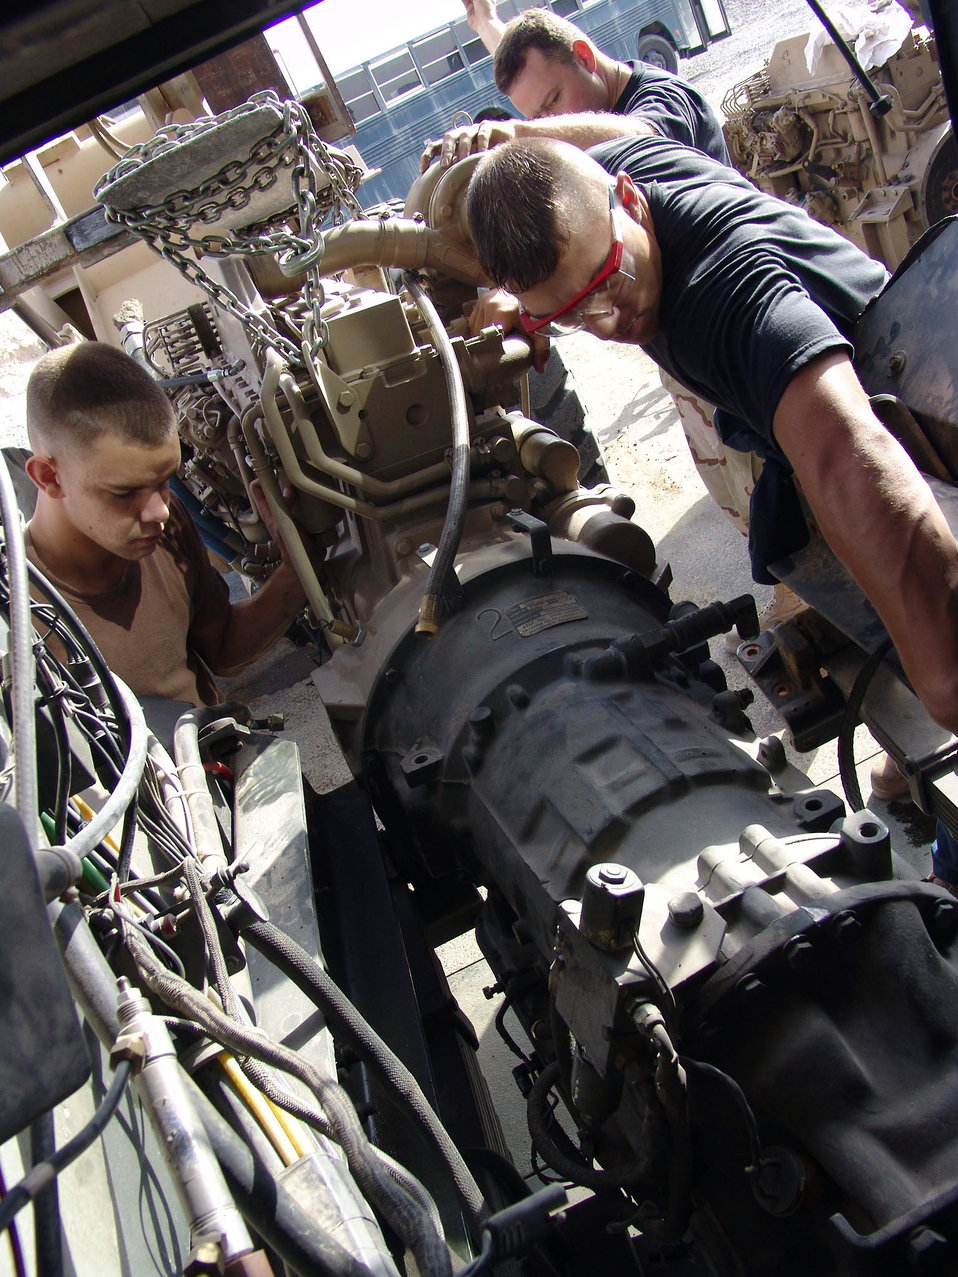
Fix it, fellas

SOUTHWEST ASIA -- Airman 1st Class Jonathon Krohn (left), Master Sgt. Michael Bares (rear) and Senior Airman Donald Manasco maneuver a 1,700-pound engine into place on a refueling truck at a forward-deployed location. The Airmen of the 386th Expeditionary Logistics Readiness Squadron's vehicle maintenance flight repair nearly 180 vehicles a month.